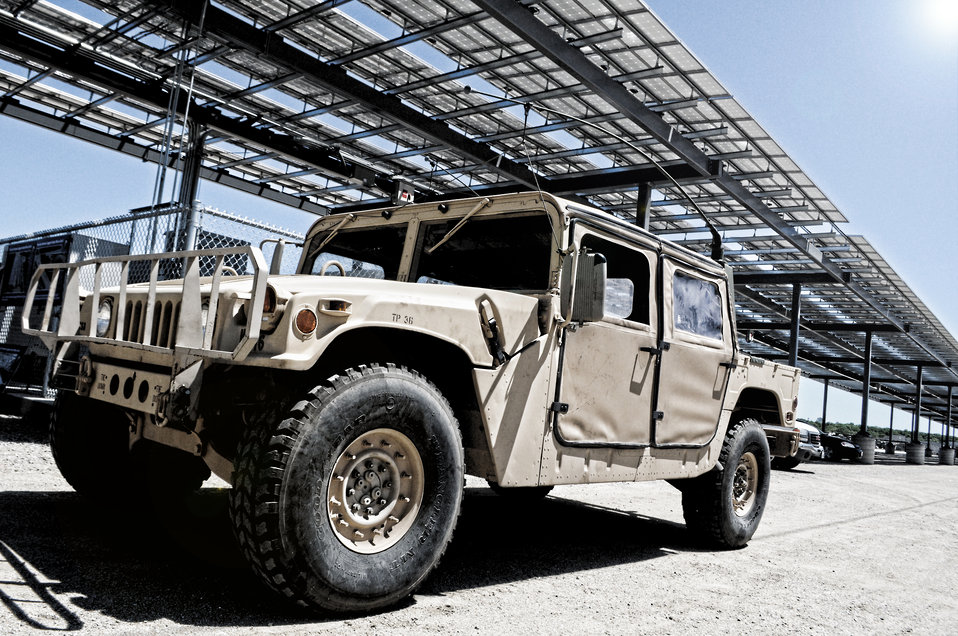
Ribbon cutting for new solar microgrid at Fort Hunter Liggett

A humvee shades under a new one megawatt solar microgrid at Fort Hunter Liggett, Calif., April 20, 2012. The U.S. Army Corps of Engineers Sacramento District oversaw construction of the $8.4 million project, which can provide enough energy to power 250 to 300 homes at once. U.S. Rep. Sam Farr of California joined Corps and post officials at a ribbon-cutting ceremony April 20. Fort Hunter Liggett is one of six pilot installations selected by the U.S. Army to be net-zero energy.